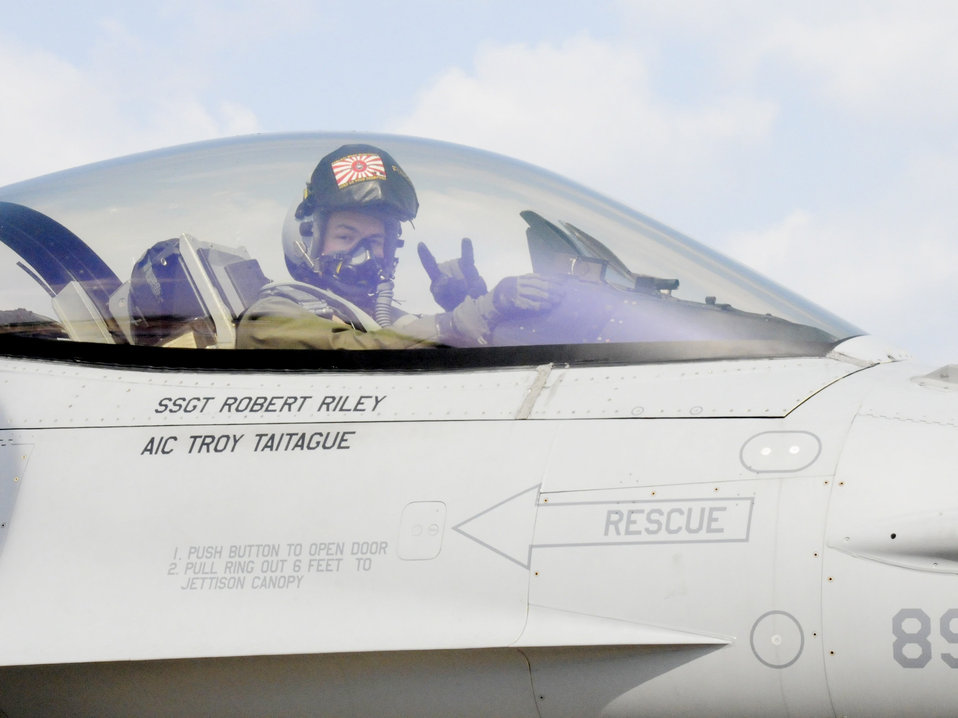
ATR exercise concludes

Capt. Ryan Cross flashes the samurai symbol as he taxis down the runway for takeoff March 11, 2010, at Tsuiki Air Base, Japan. During the aviation training relocation exercise F-16 Fighting Falcon pilots from Misawa AB, Japan, flew air combat missions against Japan Air Self-Defense Force F-2s and F-15s. Captain Cross is a 14th Fighter Squadron pilot.